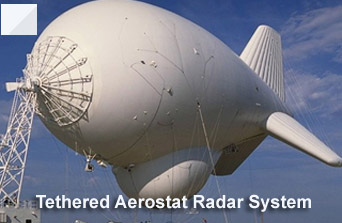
Tethered Aerostat Radar System

A 420K aerostat is on a fixed mooring system at the Tethered Aerostat Radar site in Deming, N.M.